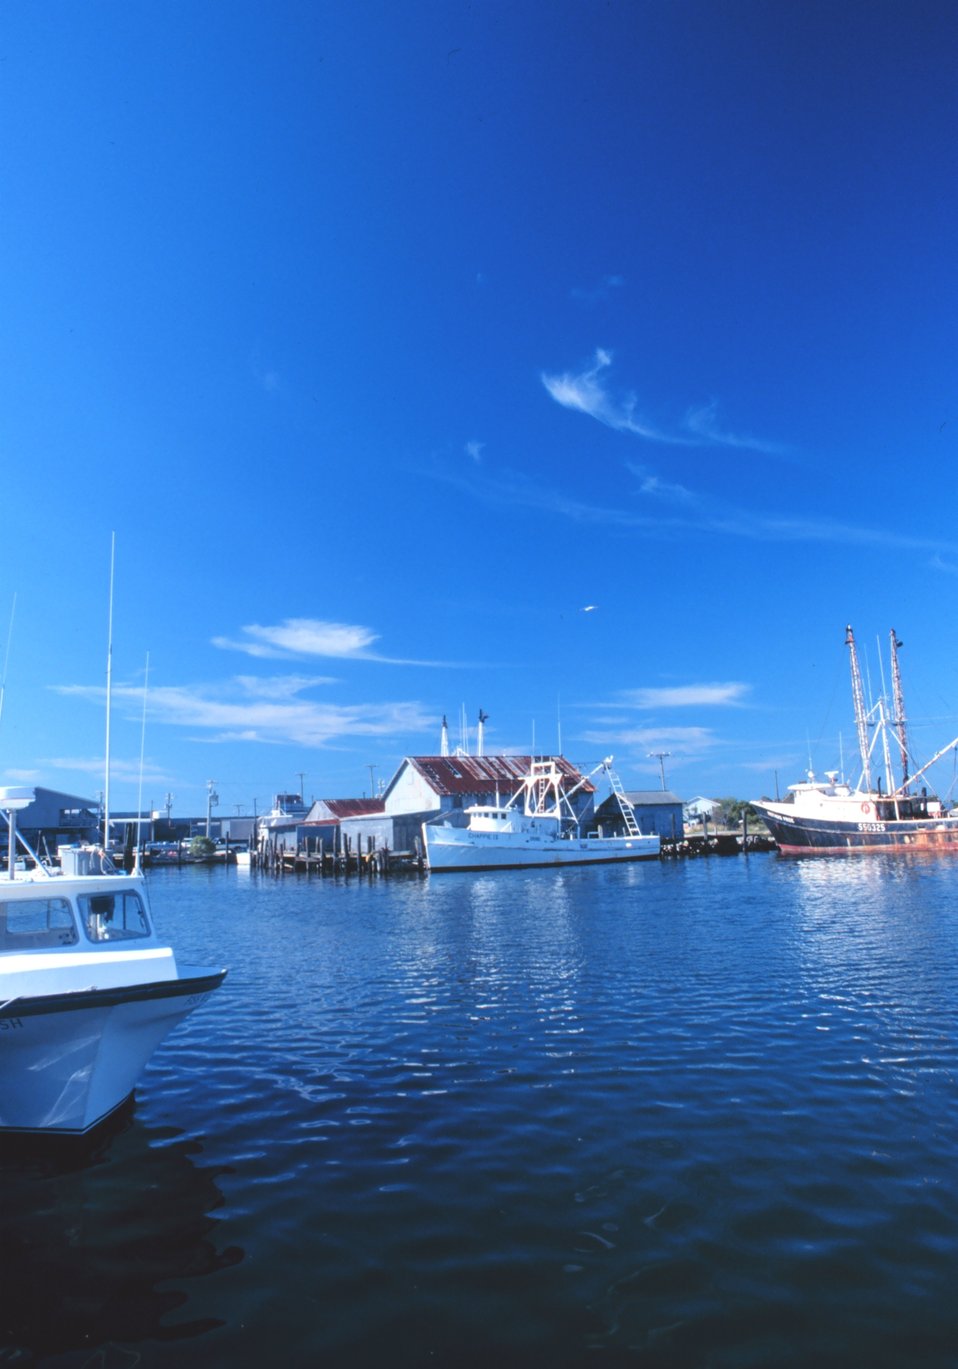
A view of the fishing port